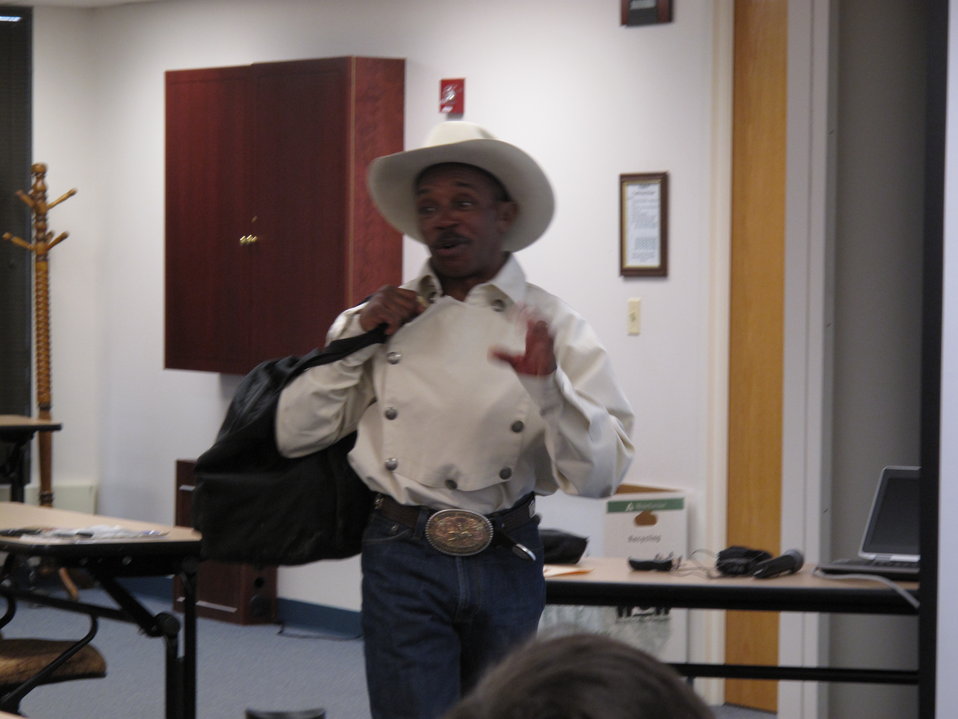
Charles Sampson with his bull riding gear.